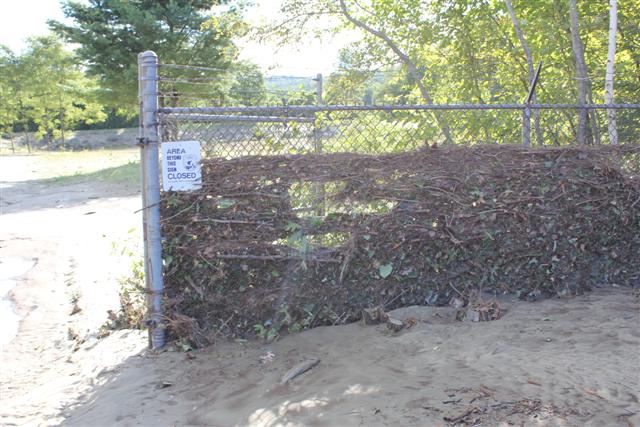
White River National Fish Hatchery after Irene

Damage and flooding at the White River National Fish Hatchery in Bethel, VT. after Hurricane Irene came through on Sunday, August 28, 2011.